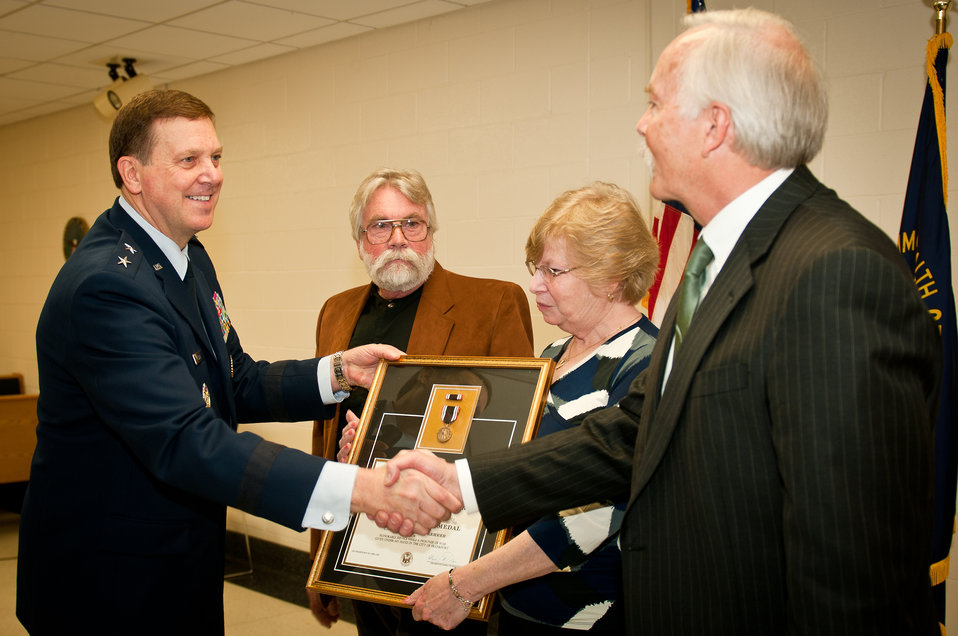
Prisoner of War Medal

Maj. Gen. Edward W. Tonini, the Kentucky adjutant general, presents a posthumous Prisoner of War Medal to the sons and daughter of the late Capt. Merlin R.